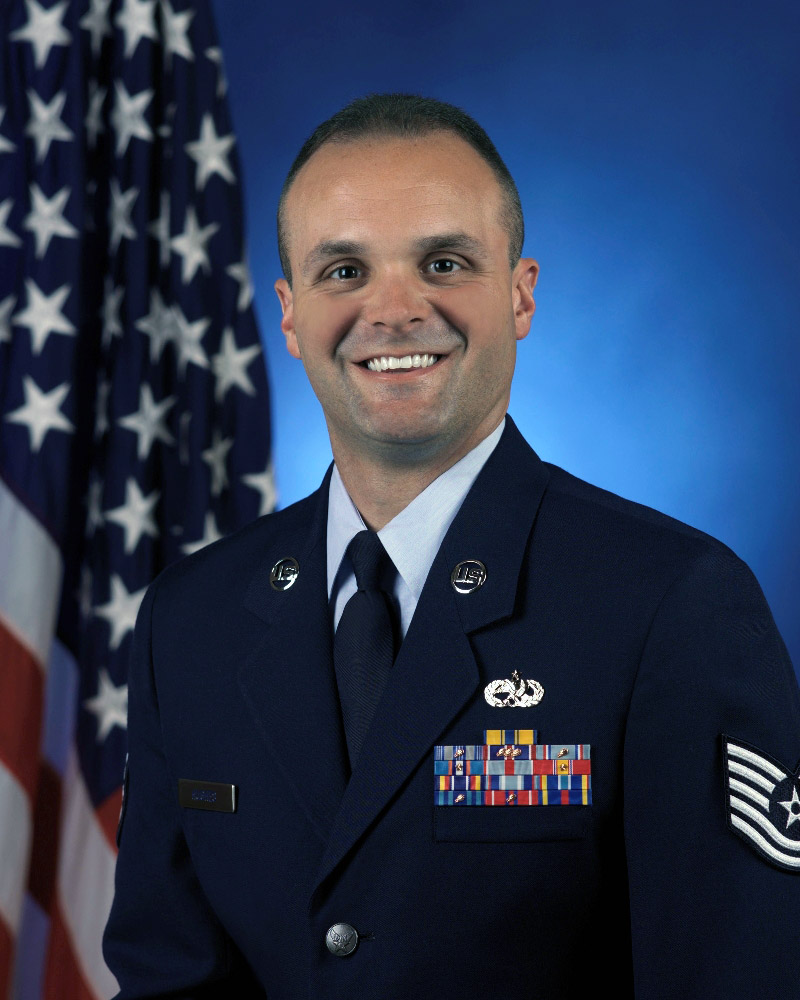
Air Force officials honor 12 Outstanding Airmen of the Year

Tech. Sgt. Jason Hughes from Elmendorf Air Force Base, Alaska, is one of the 12 Outstanding Airmen for 2008.